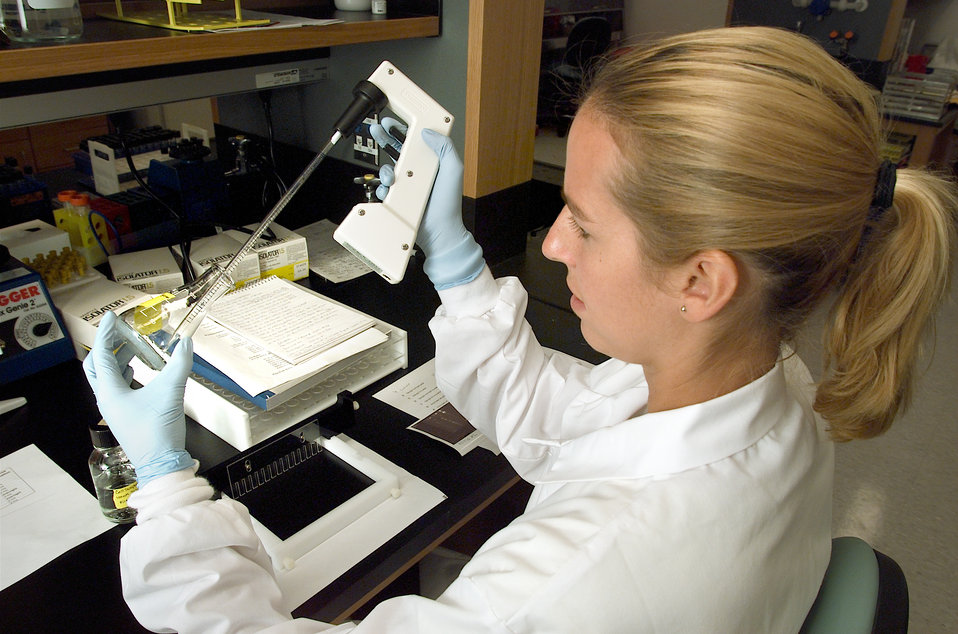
Renee Galloway, a microbiologist in the Centers for Disease Control's Meningitis and Special Pathogens Branch (MSPB), in the National Center for Infectious Diseases (NCID), was shown here running a Pulsed-field Gel Electrophoresis (PFGE) analytical test, which is used in the typing of bacterial organisms.